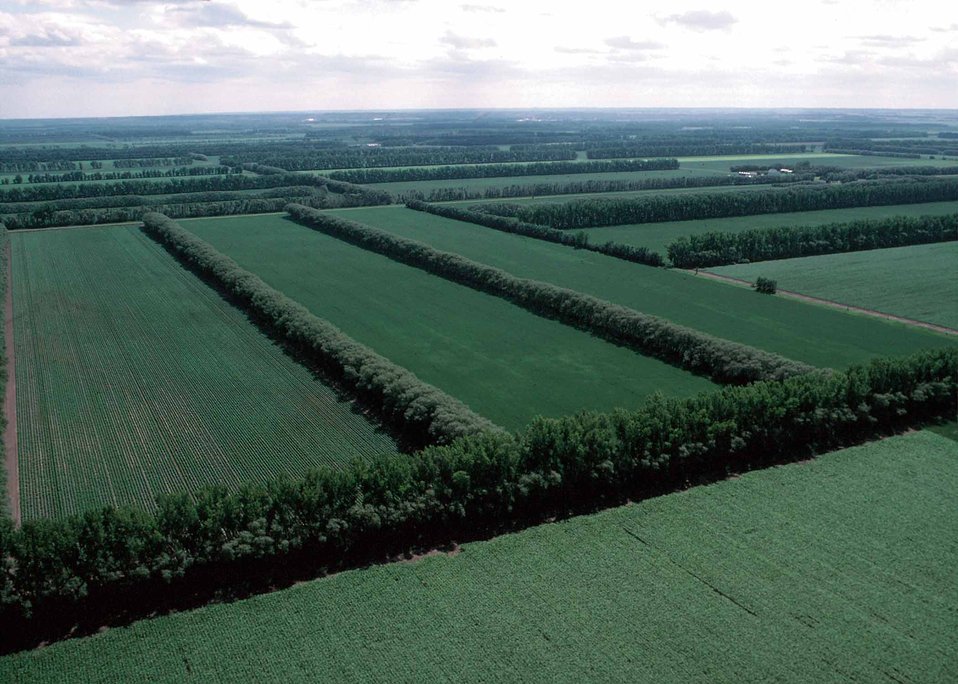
Field windbreaks in North Dakota protect the soil against wind erosion.